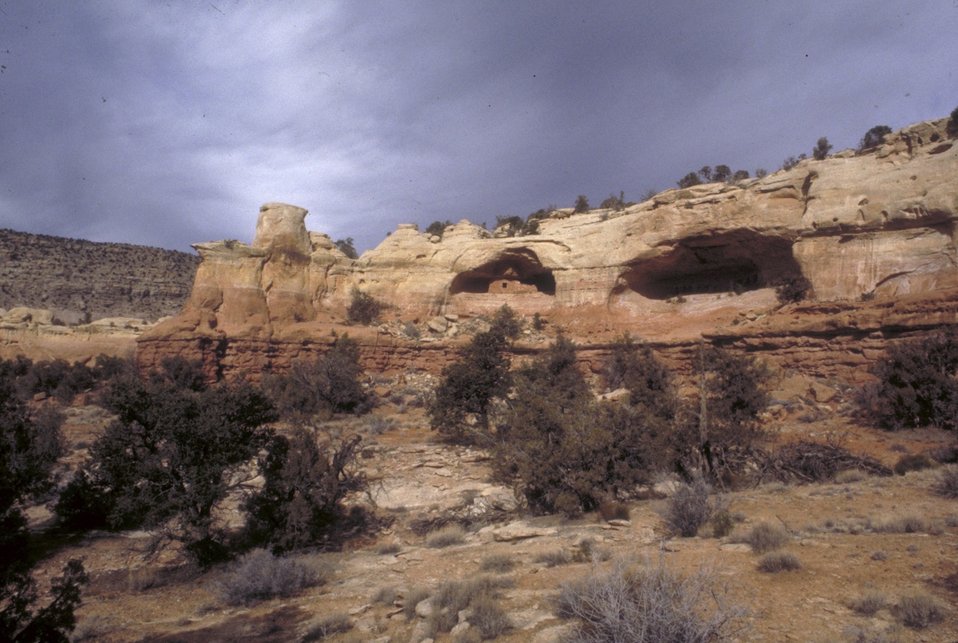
Sand Canyon, Canyons of the Ancients National Monument.